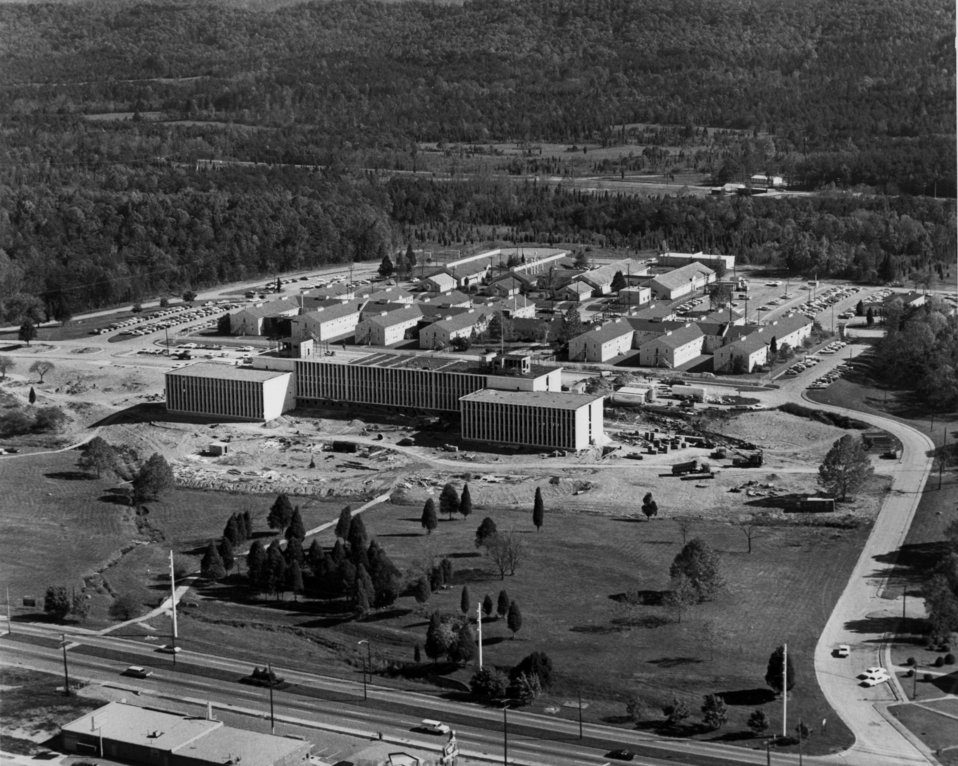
OakRidge Federal Building and AEC Admin. Bldg.

69-505 DOE photo Frank Hoffman 10-23-1969 Oak Ridge Tennessee